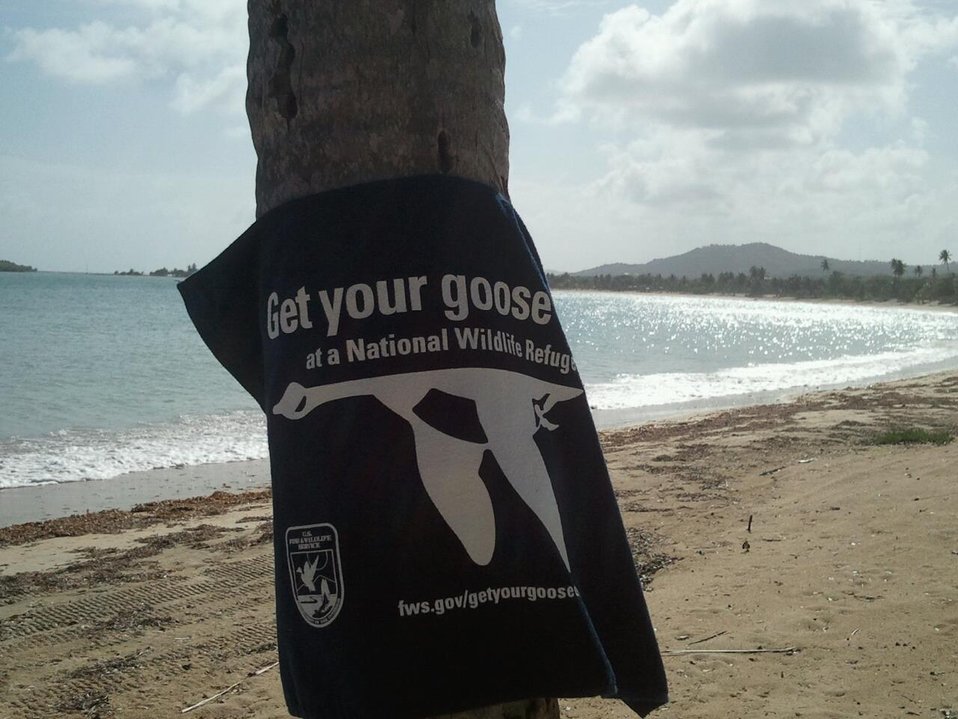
Get Your Goose On! at Vieques National Wildlife Refuge's Secret Beach